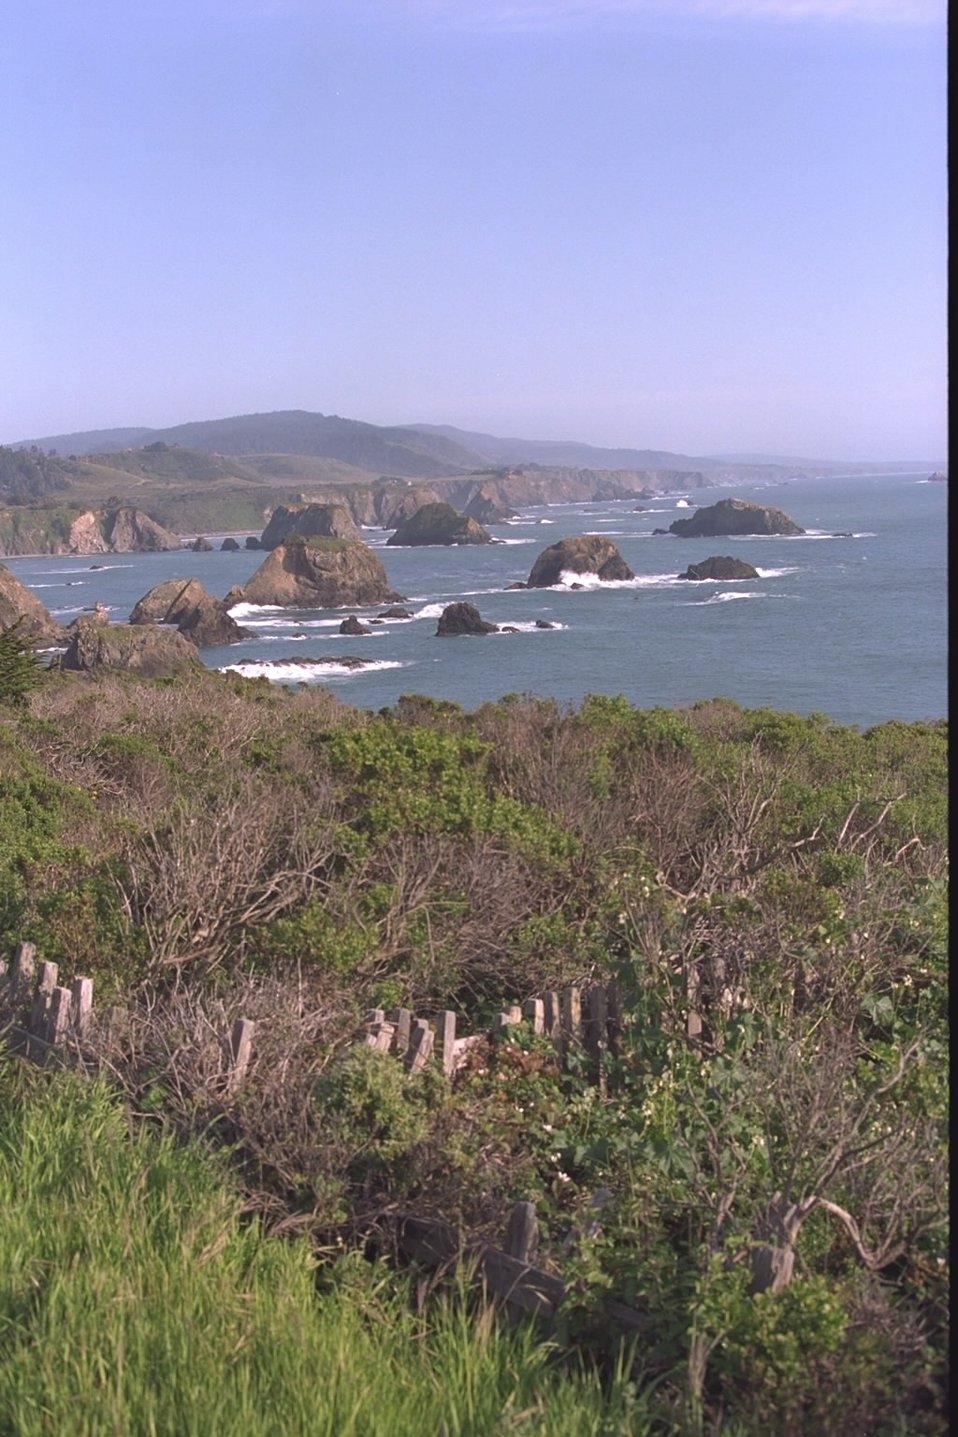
California coastal national monument